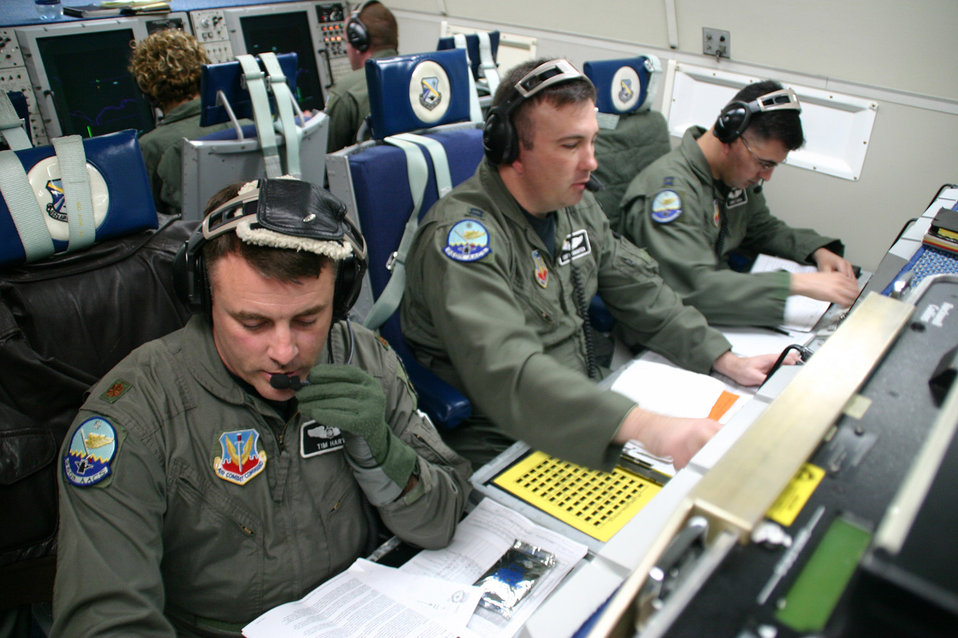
Airmen honor 30 years of AWACS

Maj. Tim Hart (left to right), Capt. Curtis Knighten and Capt. James Garza work at their stations on board an E-3 Sentry Airborne Warning and Control System aircraft during a recent mission. The first E-3 rolled out of the Boeing factory on Feb. 1, 1972, and AWACS aircraft have been providing continuous air surveillance and command and control ever since. The three Airmen are assigned to the 552nd Air Control Wing, Tinker Air Force Base, Okla.